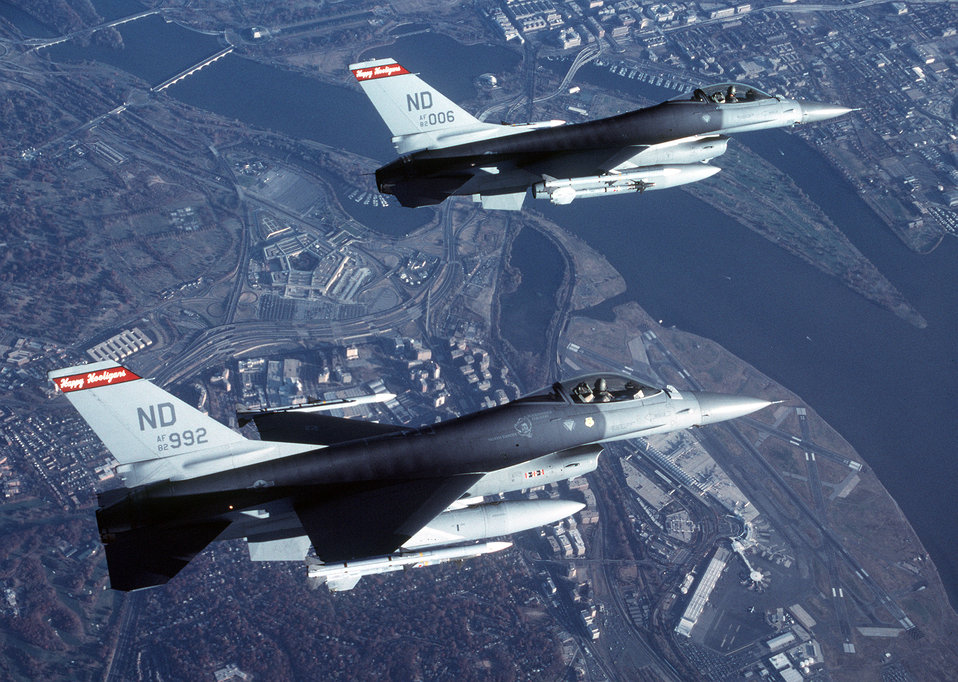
OPERATION NOBLE EAGLE --Two Air-Defense Fighter F-16A Fighting Falcons from the North Dakota Air National Guard’s 178th Fighter Squadron fly in formation Nov. 17, 2001 during a combat air patrol mission over Washington in support of Operation Noble Eagle. North American Aerospace Defense Command had more than 100 ANG and Air Force Reserve fighters from 26 locations providing homeland defense, with 100 additional fighters backing them up. Additionally, more than 20 ANG and AFRES tankers are airborne every day to keep fighters refueled.